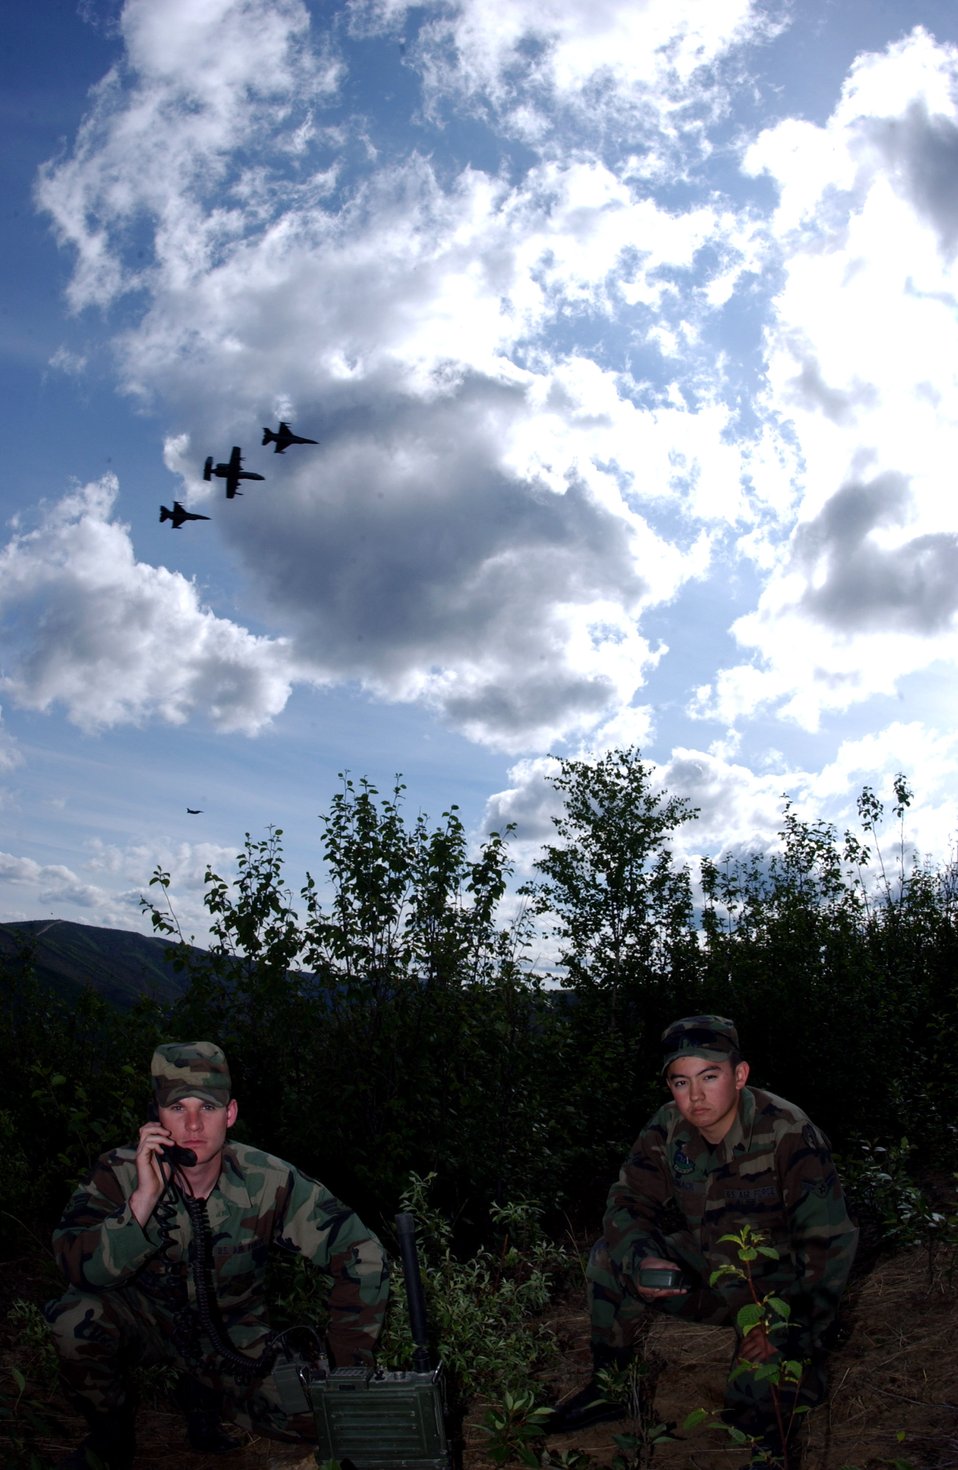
Air to ground power

Senior Airman John Tranum and Airman 1st Class Steve Vonack use a PRC-117 multiband tactical radio to communicate with aircraft during an exercise May 29 on the Pacific Alaska Range Complex in Alaska. Airmen Tranum and Vonack are assigned to the 3rd Air Support Operations Squadron tactical air control party from Fort Wainwright, Alaska. 3rd ASOS members coordinate, request and control close-air support, theater airlift, and reconnaissance.